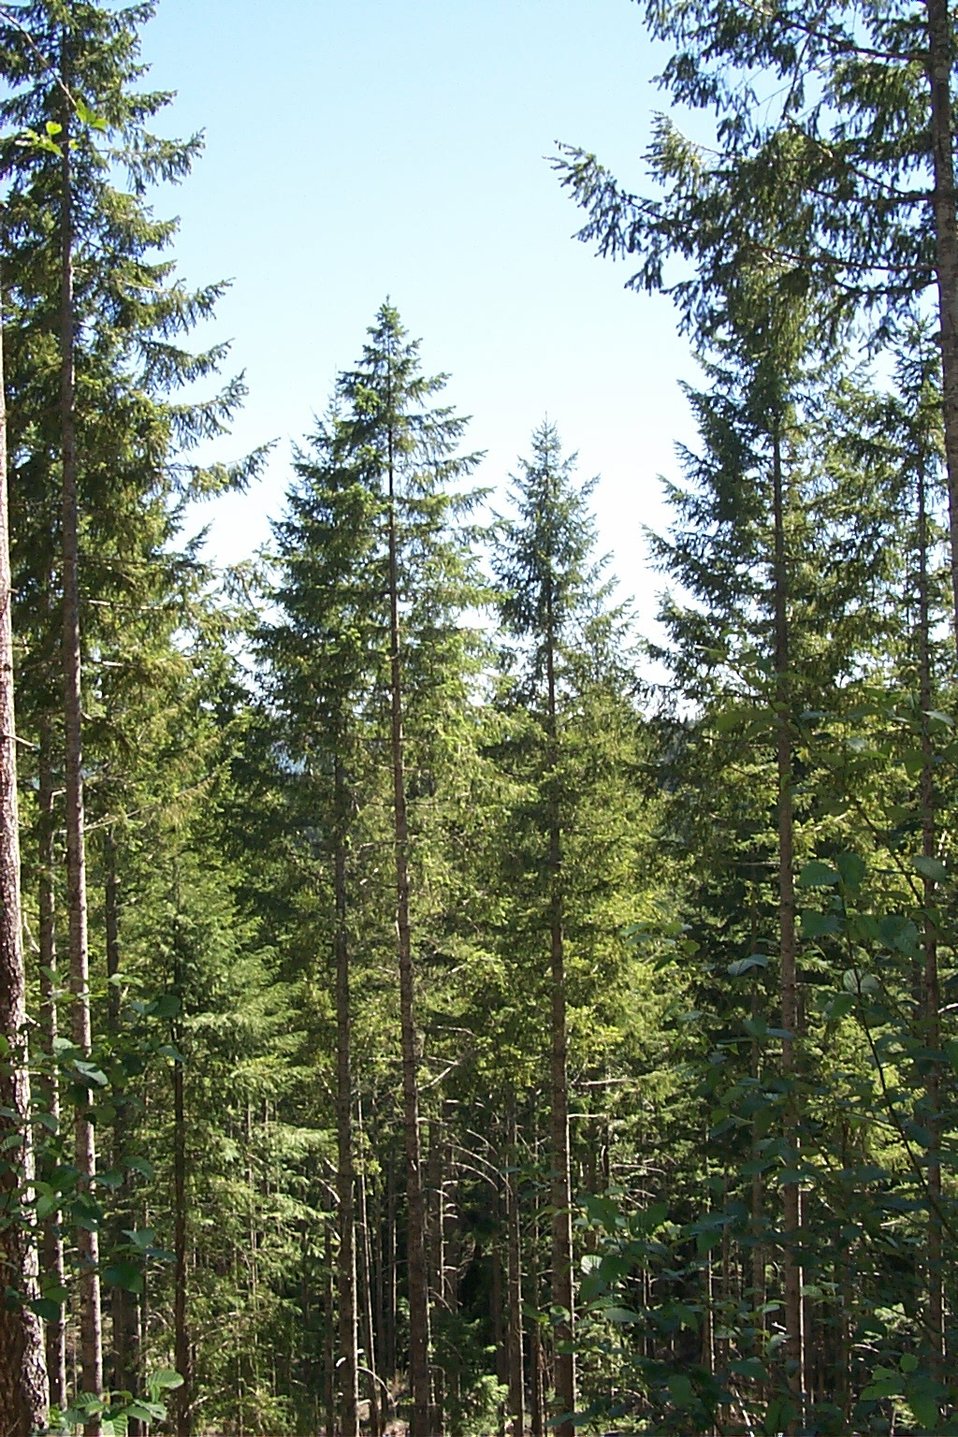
Camas East Timber Sale in Late Successional Reserve.